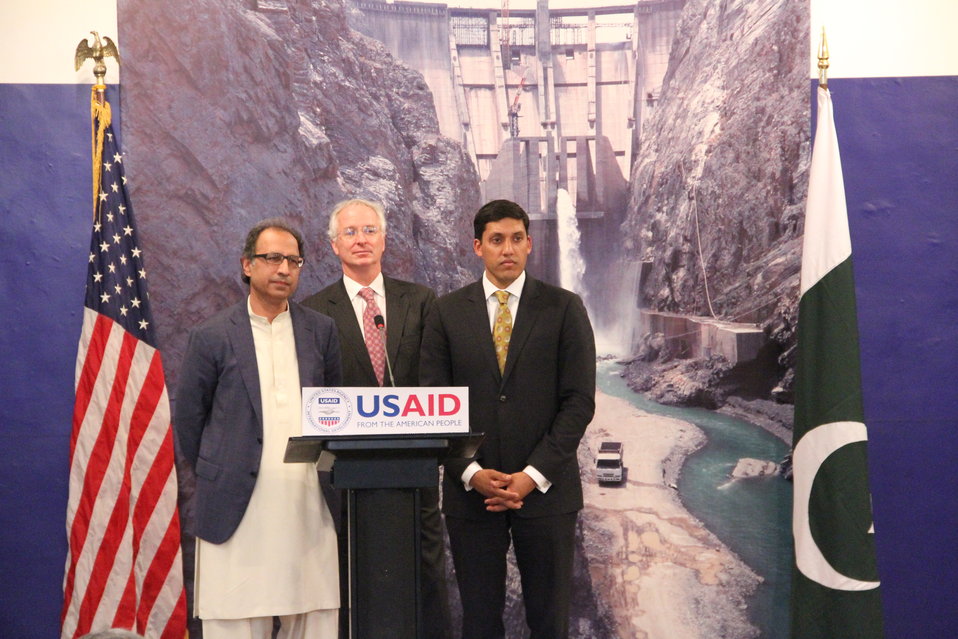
Photo Exhibition Celebrate US-PAK Cooperation at PNCA, Islamabad on April 13, 2012

Dr. Hafeez Sheikh, Federal Minister for Finance Govt. of Pakistan, Cameron Munter, & Dr. Rajiv Shah